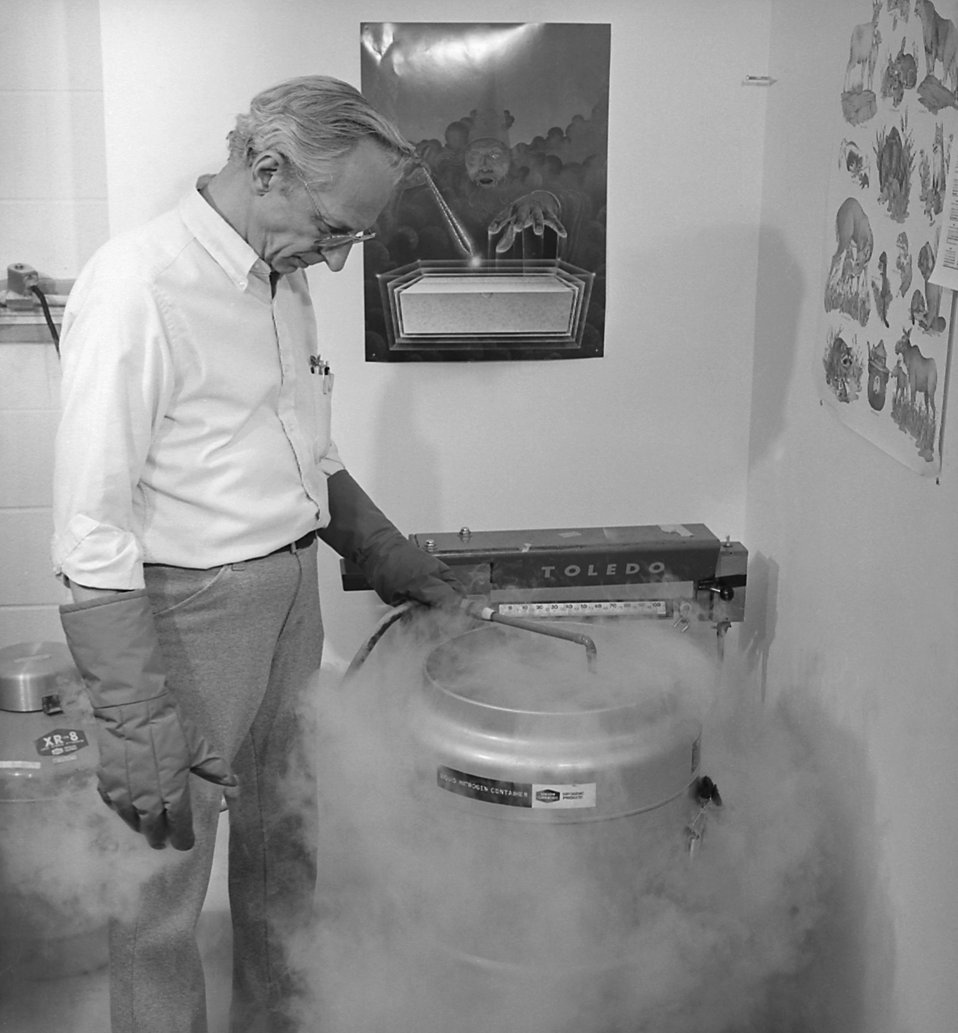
A CDC scientist is adding liquid nitrogen to a thermally insulated container.